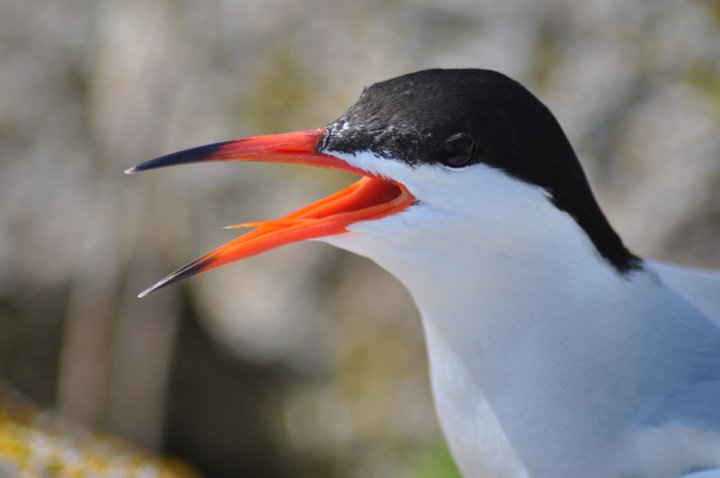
Common tern at Nantucket National Wildlfe Refuge, MA.